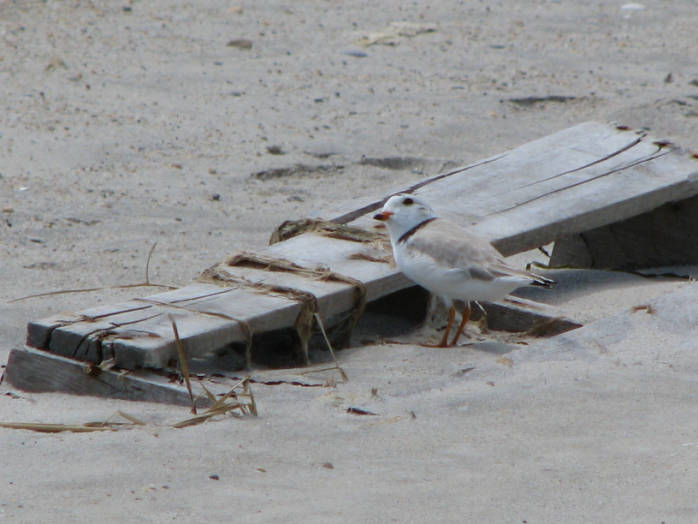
Piping Plover

Sandy Point, RI.